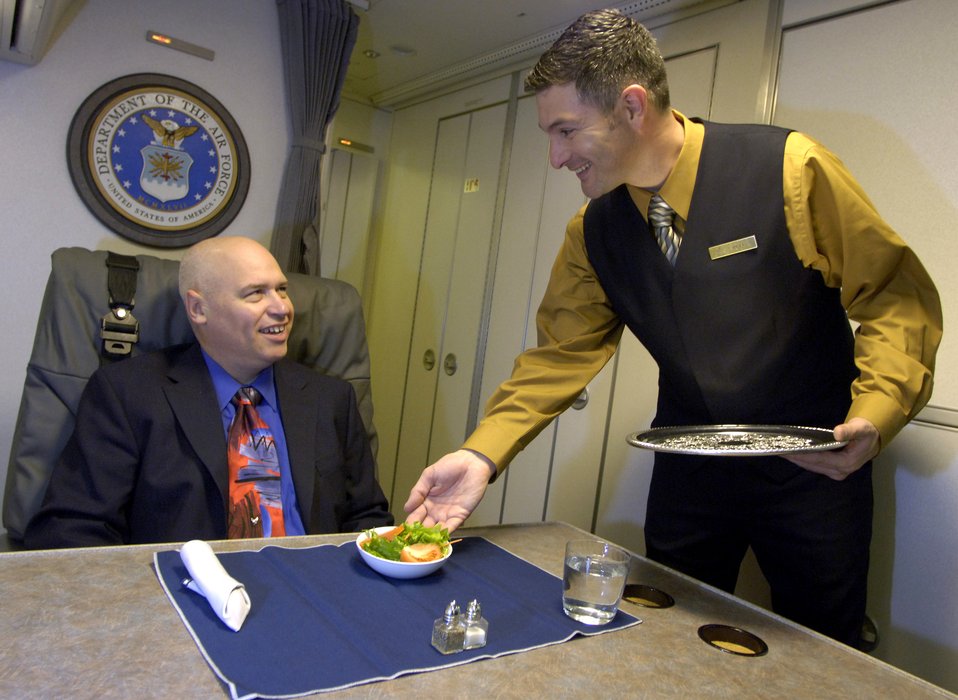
Flight attendants provide world-class service

Tech. Sgt. Pete Kana serves a salad course Oct. 31 in the state room of a C-32A aircraft. Sergeant Kana is a special air mission flight attendant with the 89th Airlift Wing's 1st Airlift Squadron, Andrews Air Force Base, Md. Though they prepare and serve food and beverages, the top priority of Air Force flight attendants are to ensure the safety of passengers and other crew members on board their aircraft.